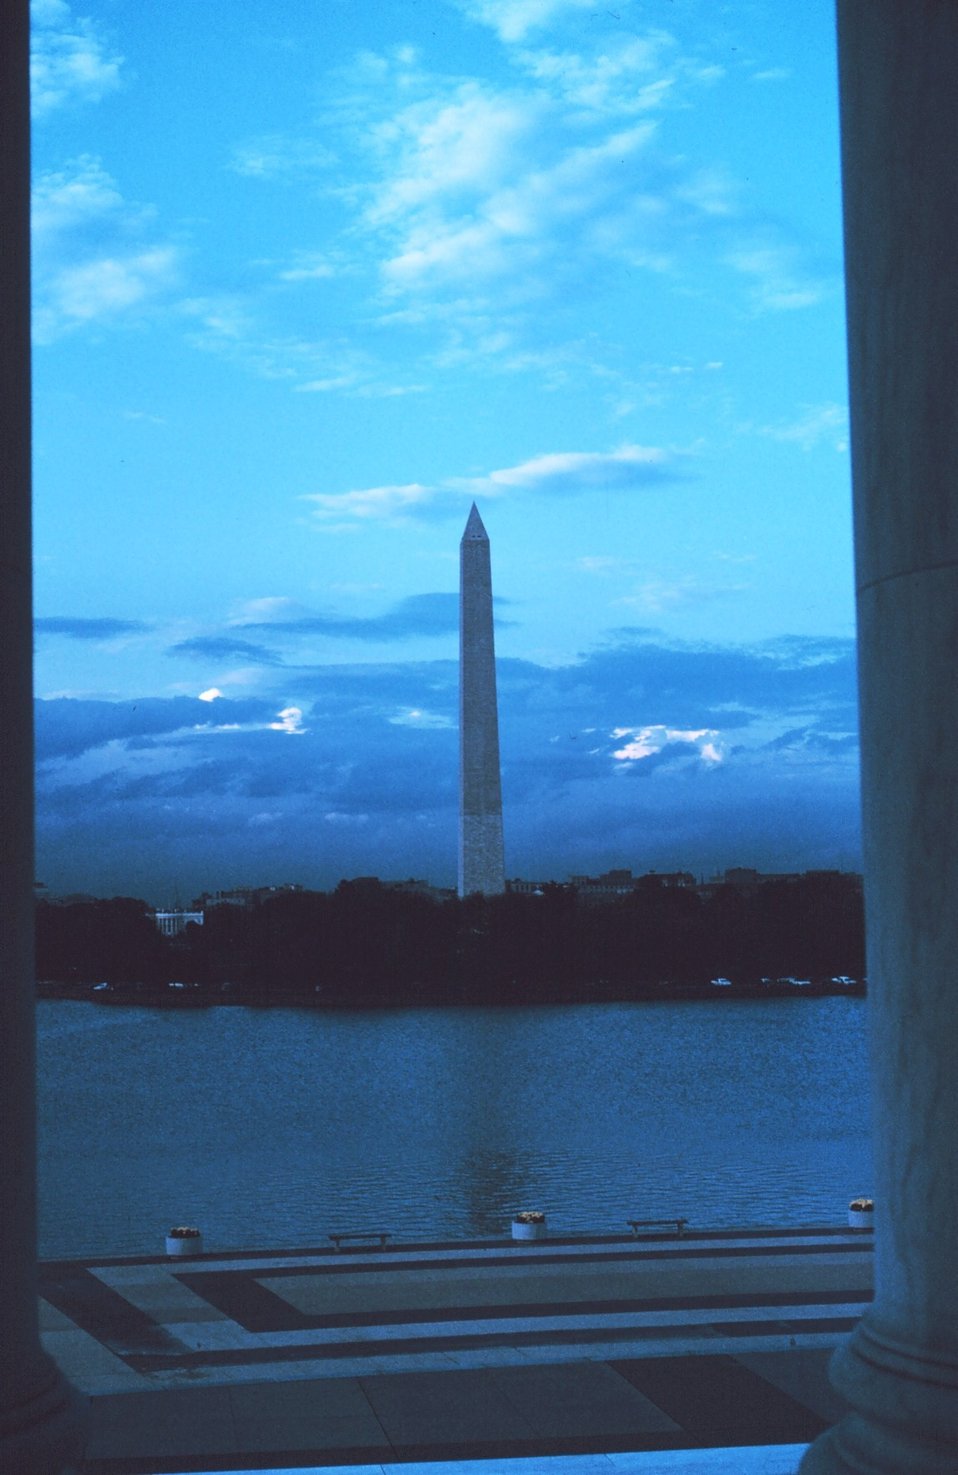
The Washington Monument and the White House as seen from the Jefferson Memorial